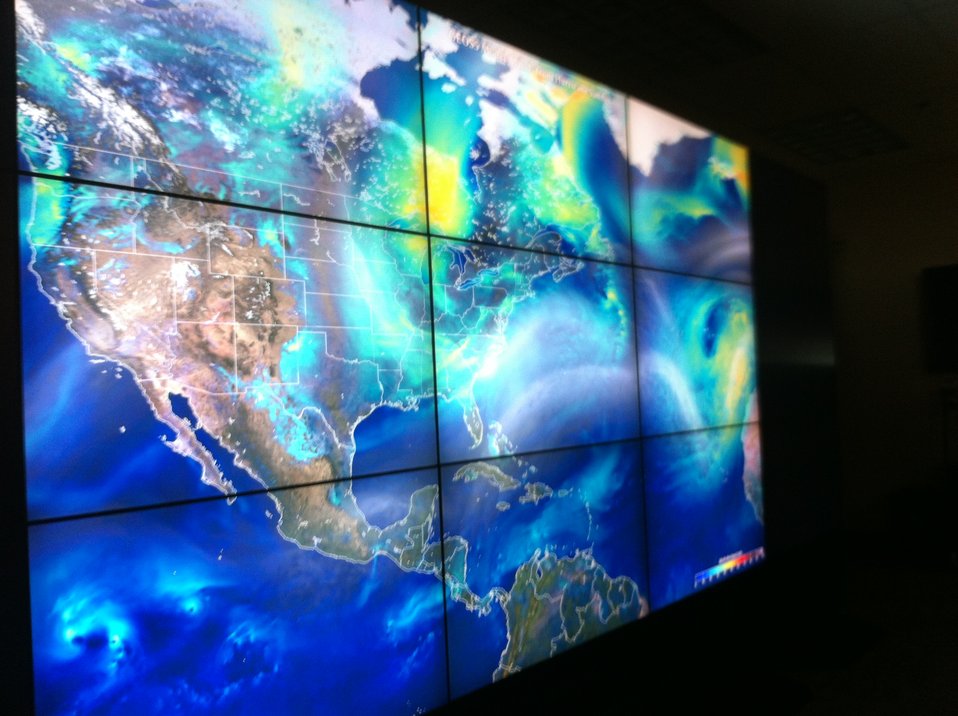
Climate Change GPM Pic1

The National Aeronautics and Space Administration (NASA) Hyperwall displays a huge monitor connected to the agency’s climate super computer that will be used in assessing data from the Global Precipitation Measurement (GPM) Core Observatory.